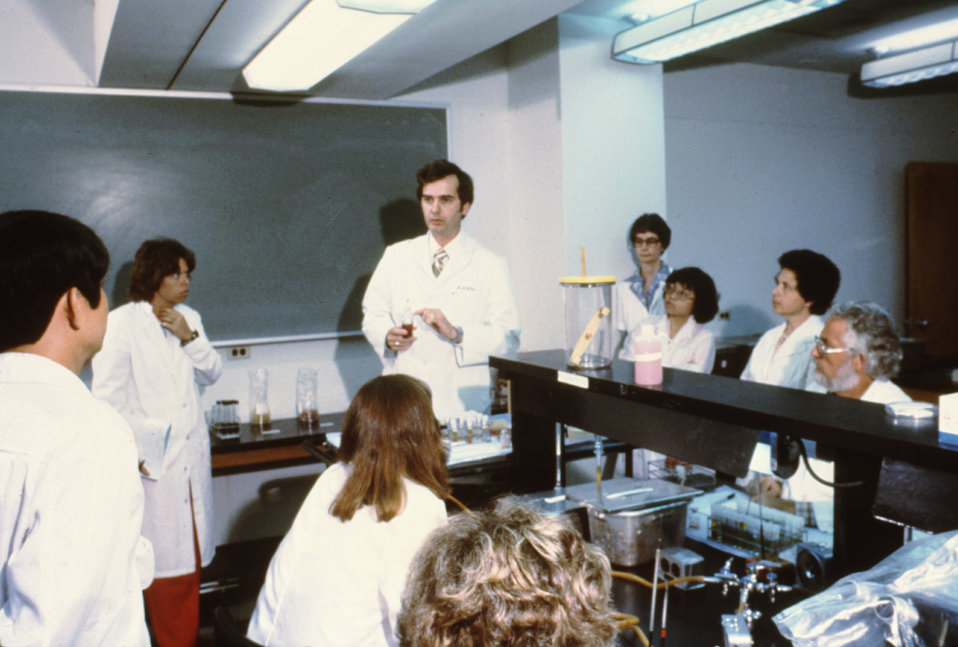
This 1981 photograph depicts a lab instructor and students during a CDC lab training course.